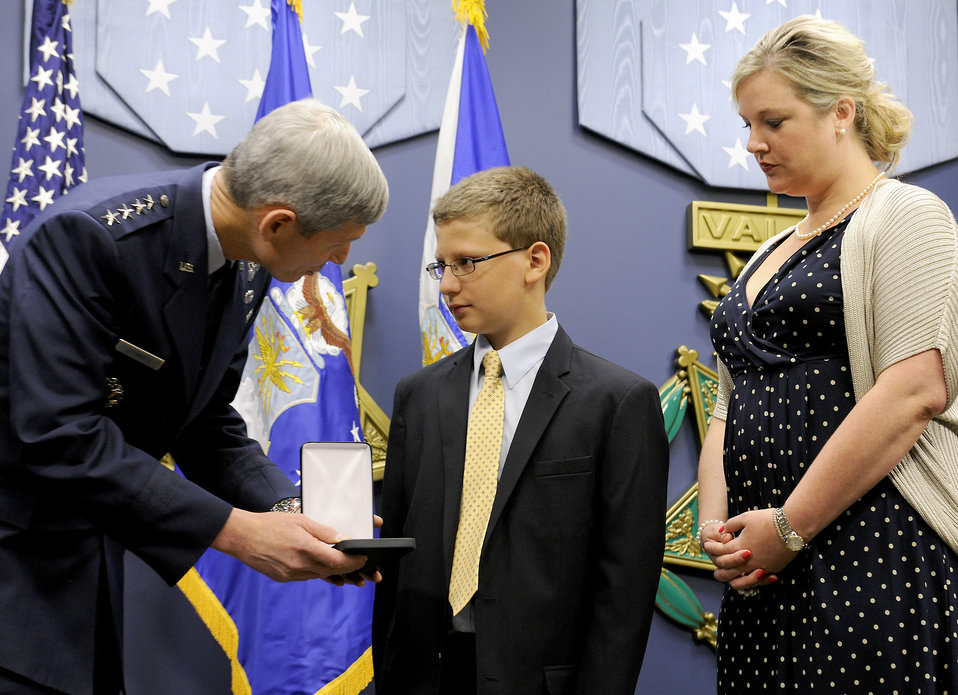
Former U-2 pilot posthumously awarded Silver Star

Air Force Chief of Staff Gen. Norton Schwartz presents the Silver Star, posthumously awarded to Capt. Francis Gary Powers, to the captain’s grandchildren, Francis Gary “Trey” Powers III and Lindsey Barry, on June 15, 2012, in the Pentagon. Captain Powers was shot down over the Soviet Union on May 1, 1960, and received the decoration for the heroism he displayed while held prisoner by the Soviets. He was released in 1962 but subsequently died in a 1977 helicopter crash.